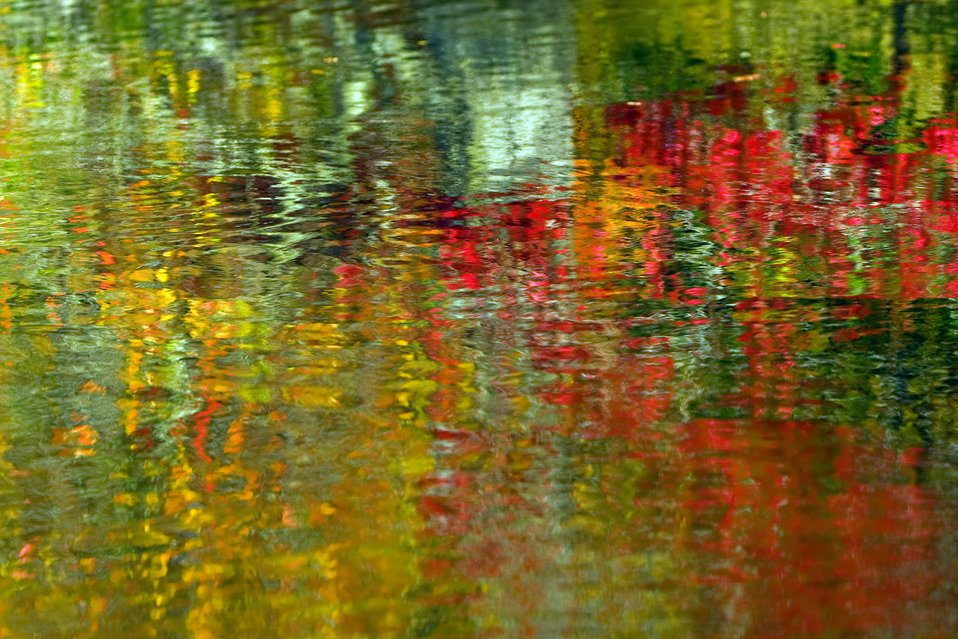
Abstract water background

Colorful blurred abstract background of water in the autumn season.